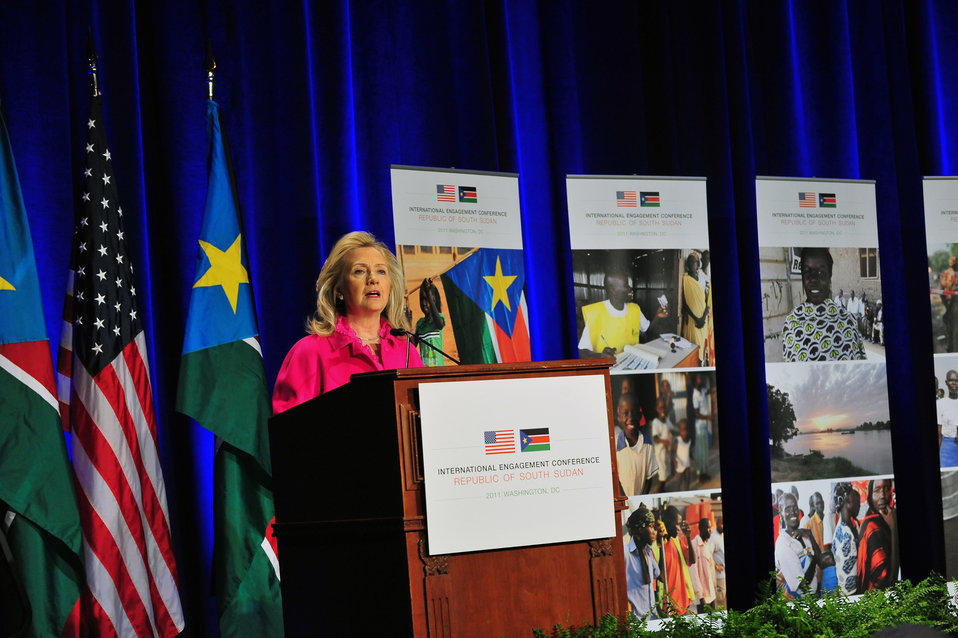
Secretary Clinton Delivers Remarks at International Engagement Conference for South Sudan

U.S. Secretary of State Hillary Rodham Clinton delivers remarks at the International Engagement Conference for South Sudan in Washington, D.C., on December 14, 2011.